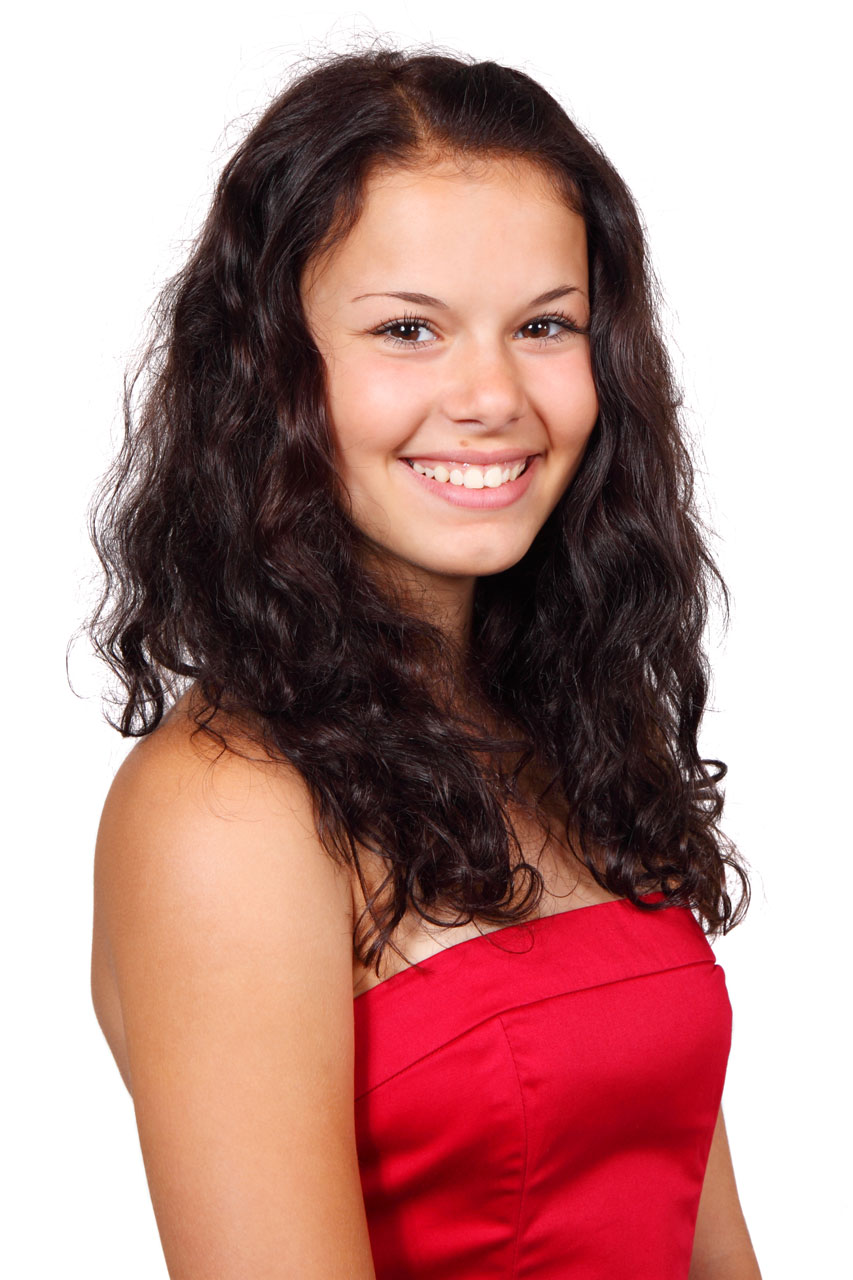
Portrait in red dress

Smiling young woman in red dress.